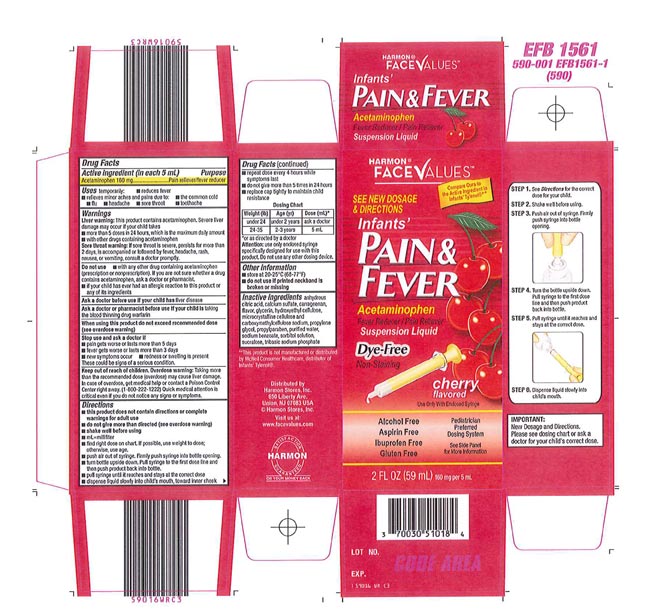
Recalled - Acetaminophen infant suspension liquid

November 1, 2013 – Product Recall – Perrigo Initiates Nationwide Voluntary Product Recall of Acetaminophen Infant Suspension Liquid, 160 Mg/5 Ml, Due to a Potential Defect with the Co-packaged Oral Syringe.